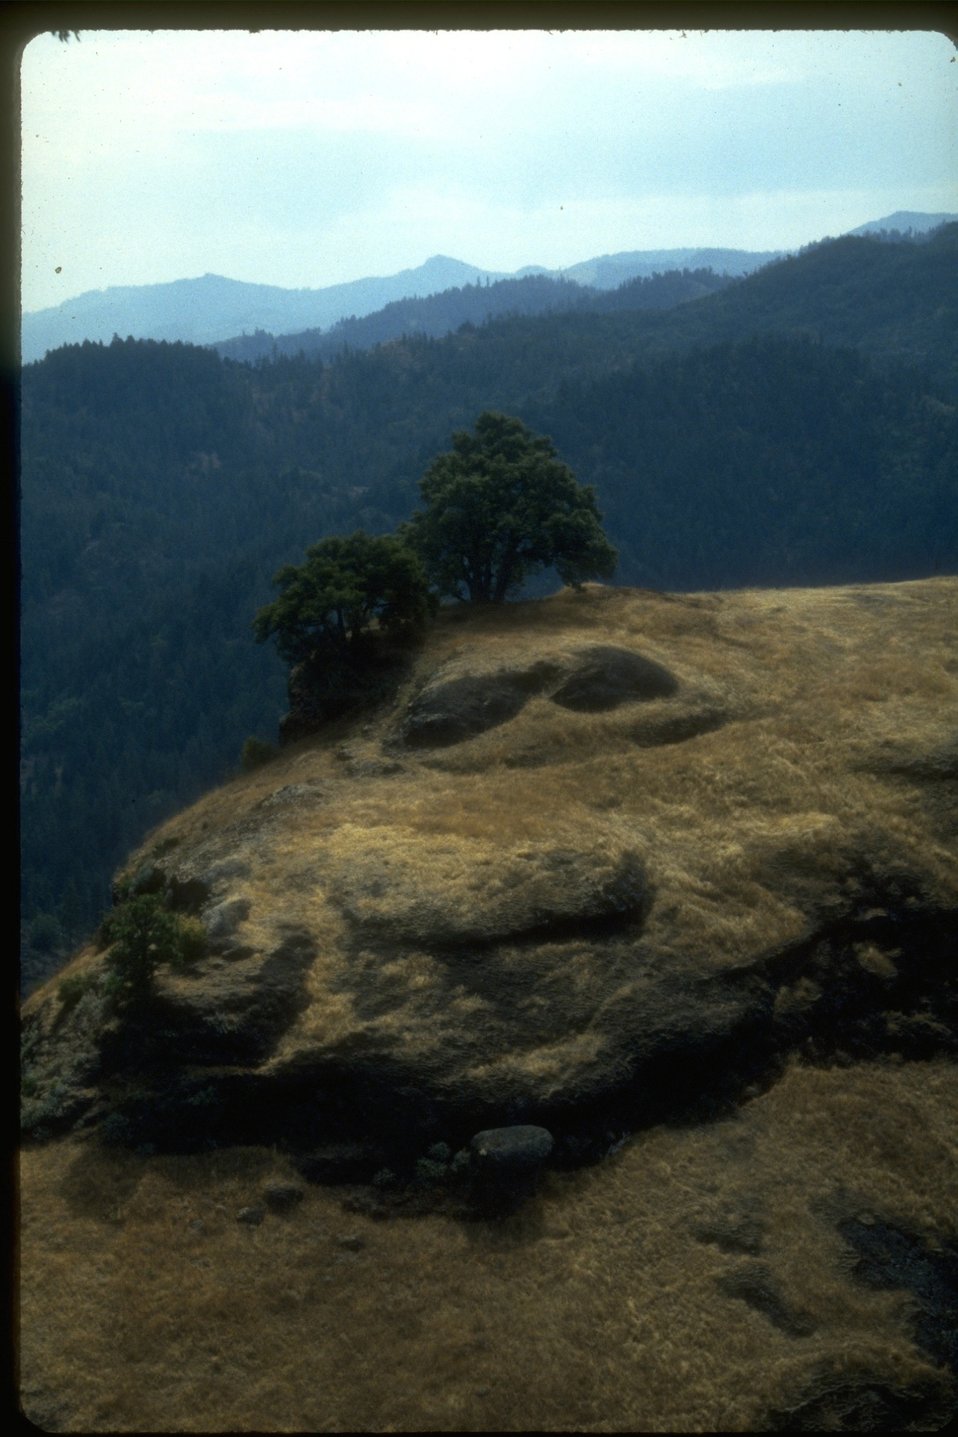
View of Cow Creek Bluffs.